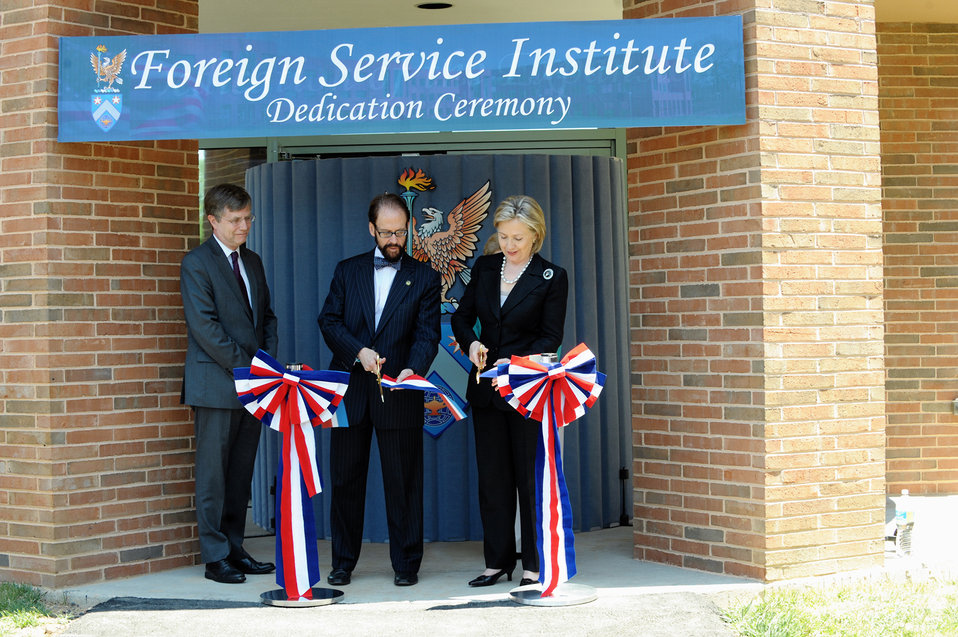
Secretary Clinton Holds Ribbon Cutting Ceremony

U.S. Secretary of State Hillary Rodham Clinton holds a Ribbon Cutting Ceremony for the newly expanded George P. Shultz Center at the Foreign Service Institute in Arlington, Virginia, on June 18, 2010.